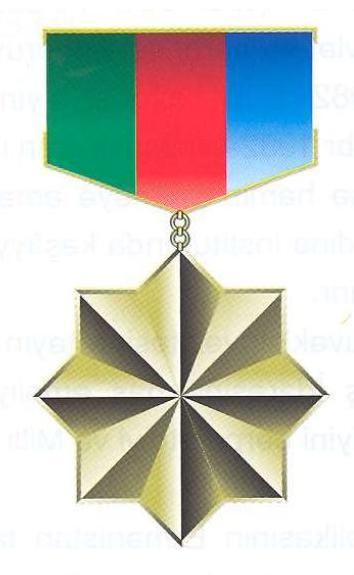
National Hero of Azerbaijan Українська: Нац Герой